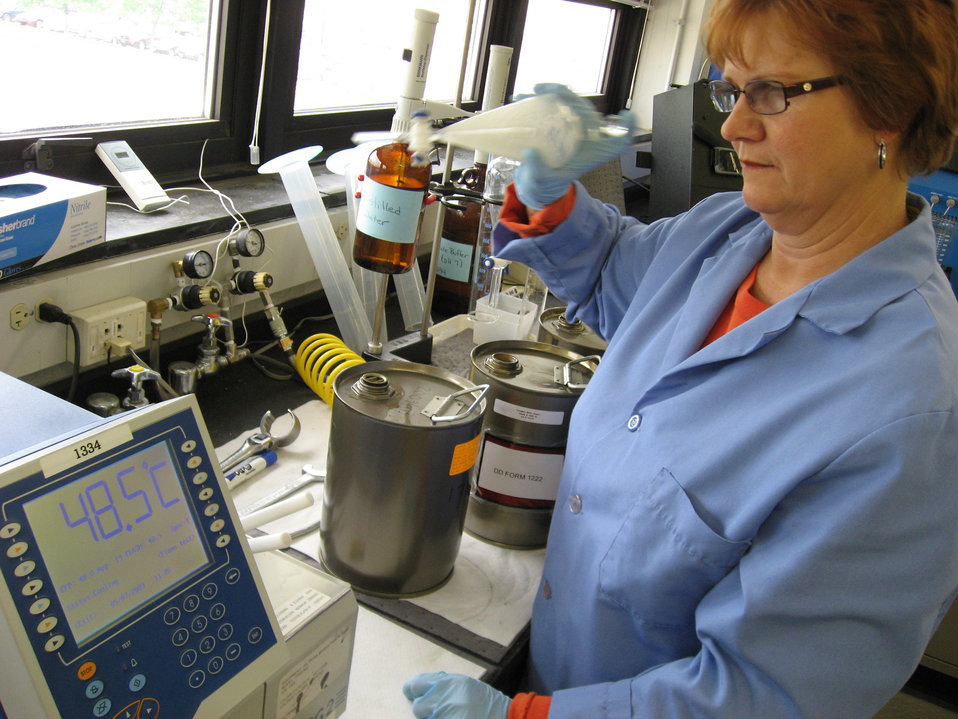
Officials test commercial fuel to replace JP-8 fuel

Janet Stewart concludes a test of the flash point temperature in a sample of commercial Jet A fuel while preparing to measure the concentration of fuel system icing inhibitor in another sample in the Aerospace Fuels Laboratory at Wright-Patterson Air Force Base, Ohio. Air Force Petroleum Agency and Air Force Research Laboratory researchers are partnering on an initiative to evaluate the use of commercial jet fuel in place of military standard JP-8 fuel. Ms. Stewart is a fuels quality assurance specialist with the Aerospace Fuels Laboratory at Wright-Patterson AFB.